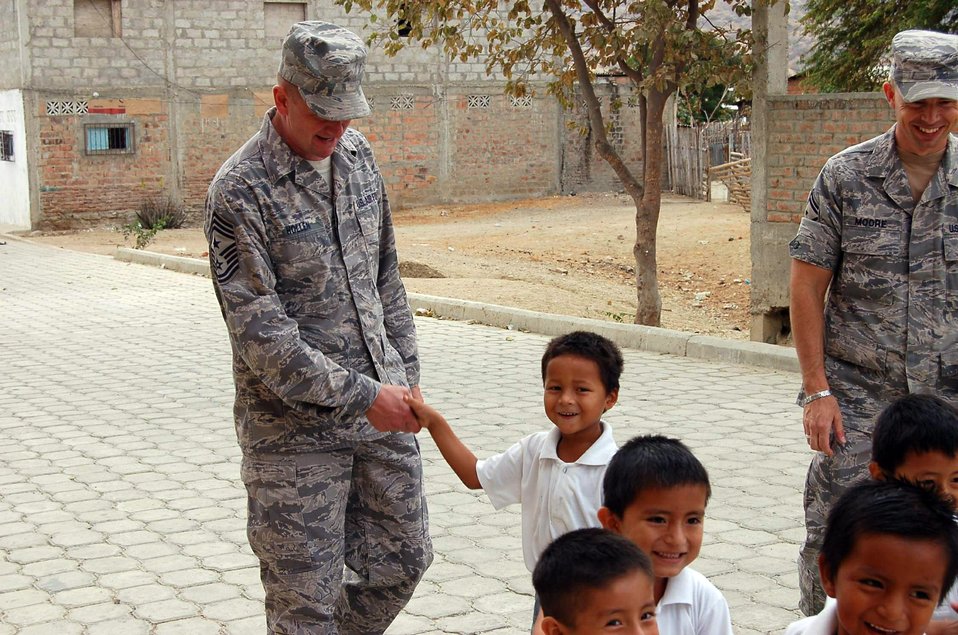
Airmen visit school in Ecuador, donate supplies

Chief Master Sgt. Lloyd Hollen greets a student before walking to the school's center to watch the presentation of Southern Command's Humanitarian Assistance Program donation of school supplies Dec. 10 in San Juan, Ecuador. Chief Hollen is the command chief for the Air Forces Southern and 12th Air Force.